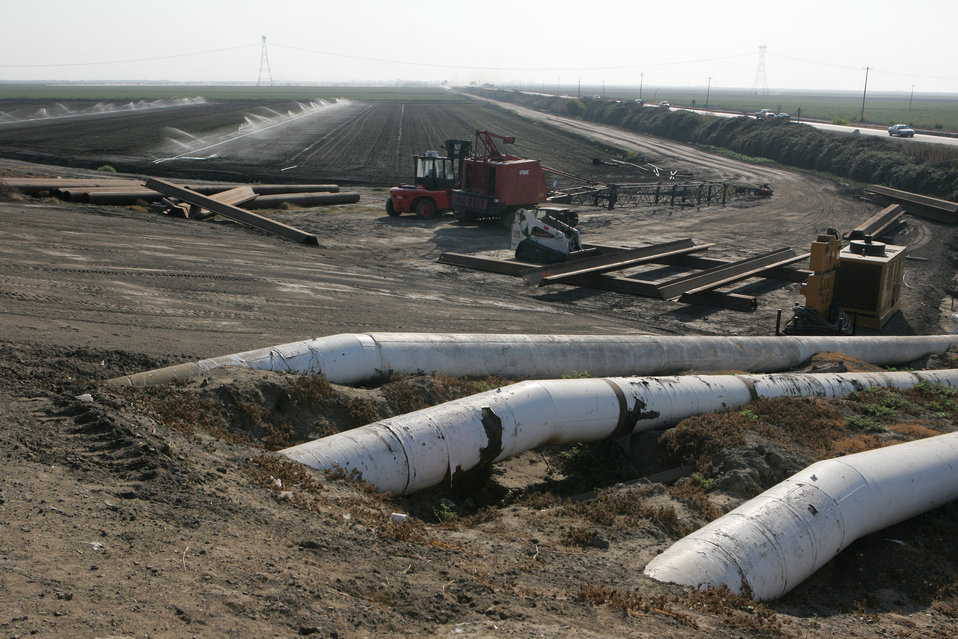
VICTORIA ISLAND,Calif.(Sept.13,2006)--Delta farming of asparagus with water pumping on Victoria Island. The U.S. Army Corps of Engineers, Sacramento and San Francisco Districts, has multiple studies and projects addressing the mission areas of Ecosystem Restoration, Flood Risk Management, Navigation, and Watershed Planning within the Delta region. The study boundaries and mission areas of these ongoing projects sometimes coincide, complicating planning and coordination efforts. In addition to the projects undertaken by the Corps, numerous other Federal, State, and local efforts are underway. The key component to the success of each of these initiatives will involve sharing of information, cooperation, collaboration, and partnership.